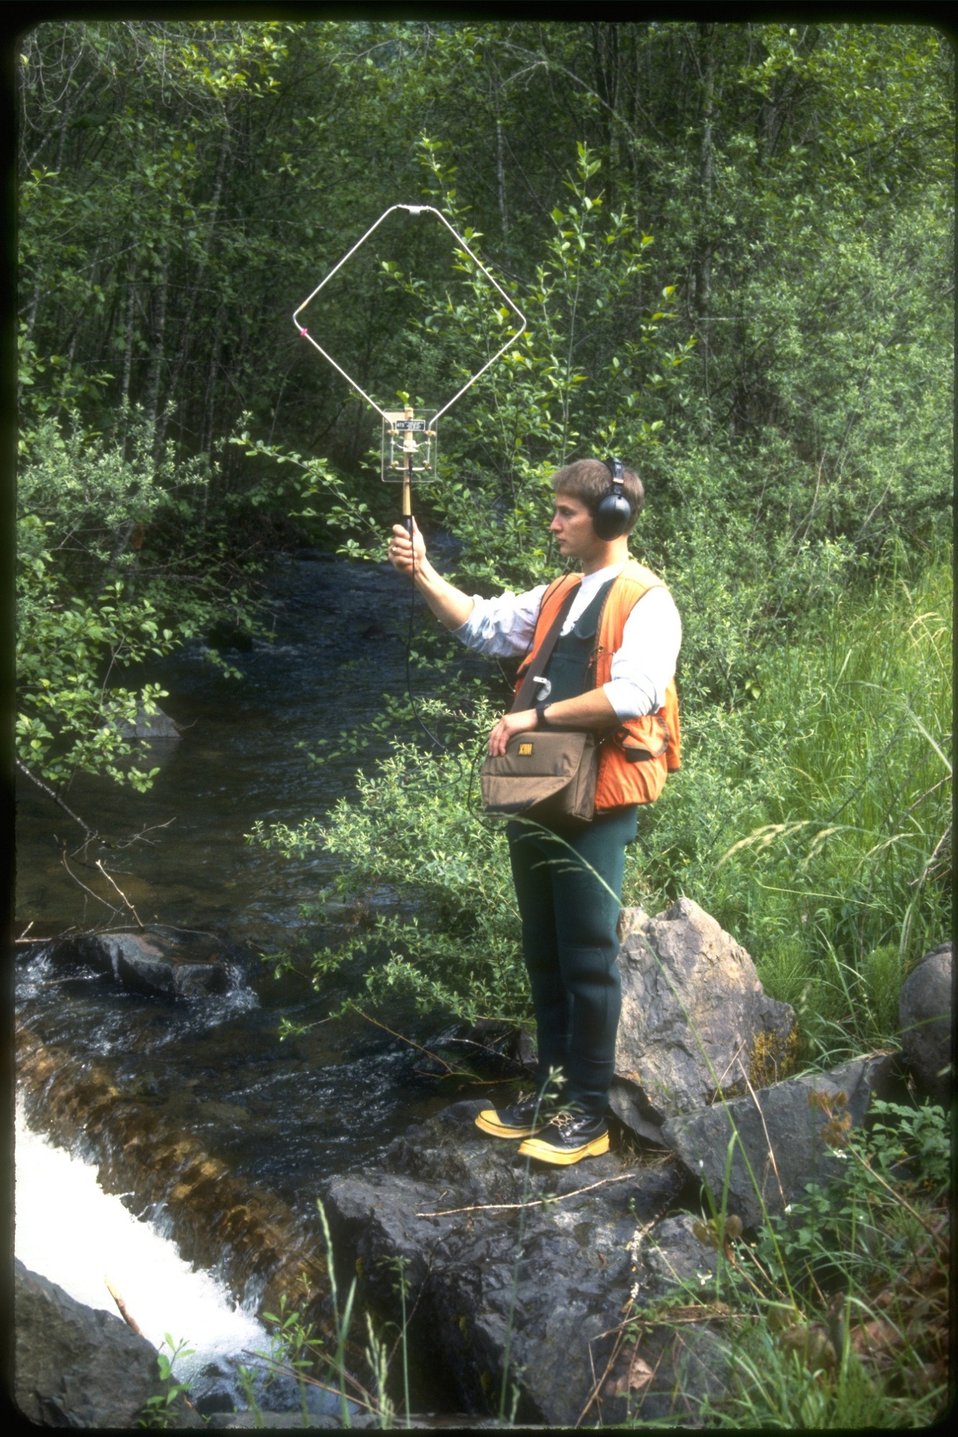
Worker using radio telemetry to track fish.